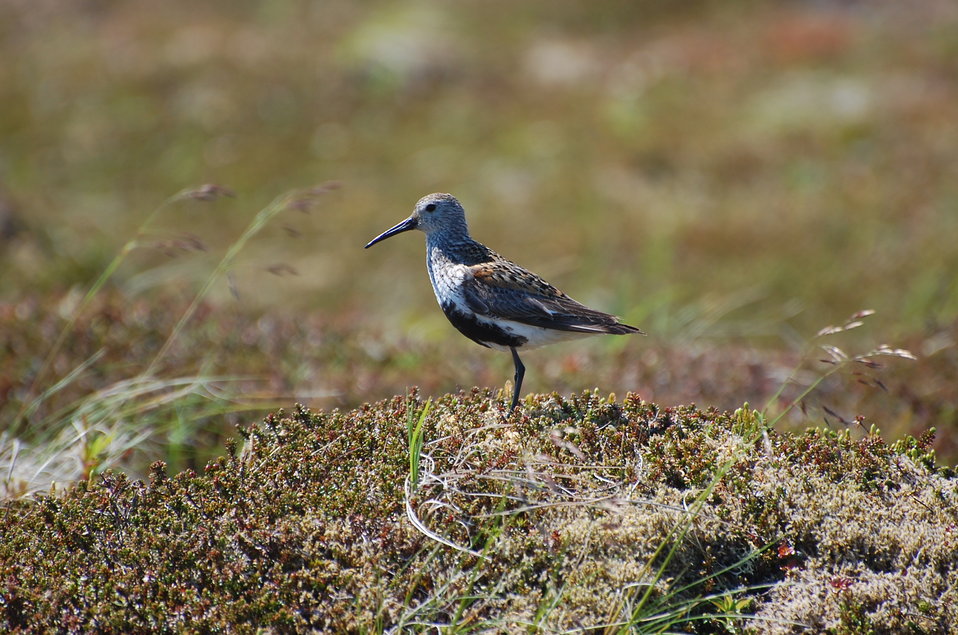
Dunlin

Izembek National Wildlife Refuge
Photo by Kristine Sowl,
USFWS, Public Domain